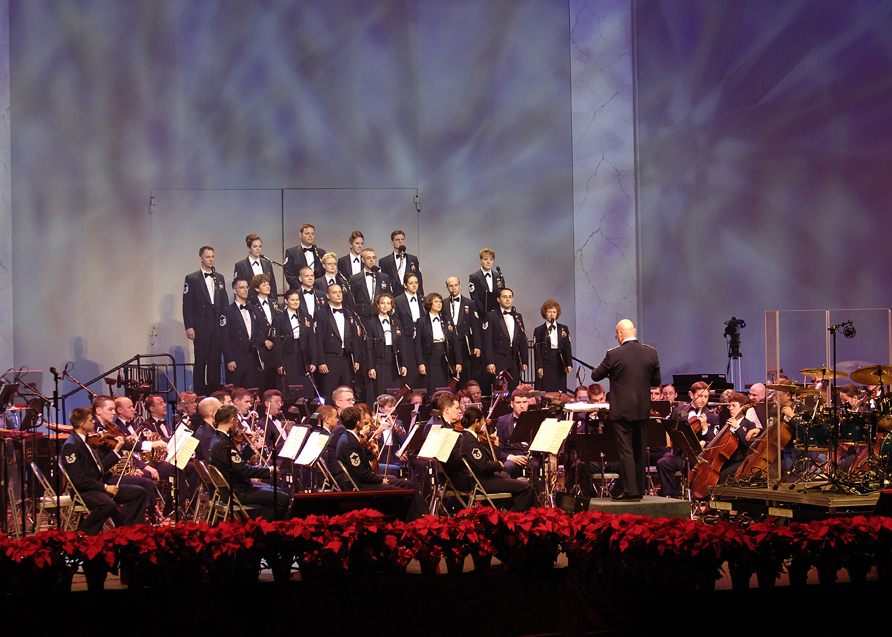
Children tune in Air Force

United States Air Force Symphony Orchestra performs during a holiday concert at the Daughters of American Revolution Constitution Hall in Washington Dec. 1, 2006. The Air Force Band to include Max Impact, The Air Force Symphony Orchestra and members of the Airman of Note performed for the first time at a holiday concert for students in the local area.